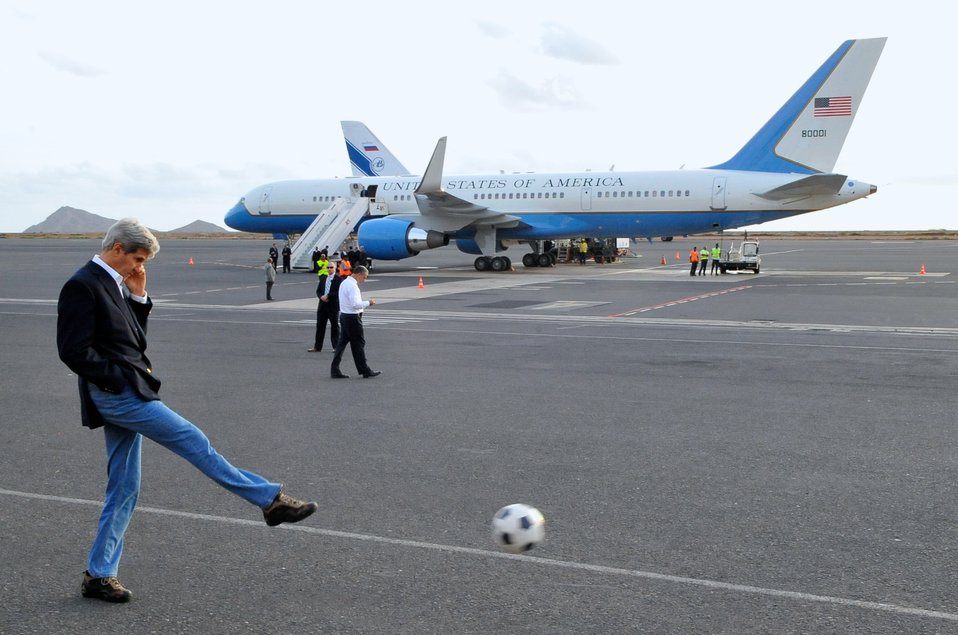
Secretary Kerry Kicks Soccer Ball During Refueling Stop in Cape Verde

U.S. Secretary of State John Kerry kicks a soccer ball as his Air Force jet is refueled on Sal Island, Cape Verde, during a flight from Luanda, Angola, to Andrews Air Force Base, Maryland, on May 5, 2014.